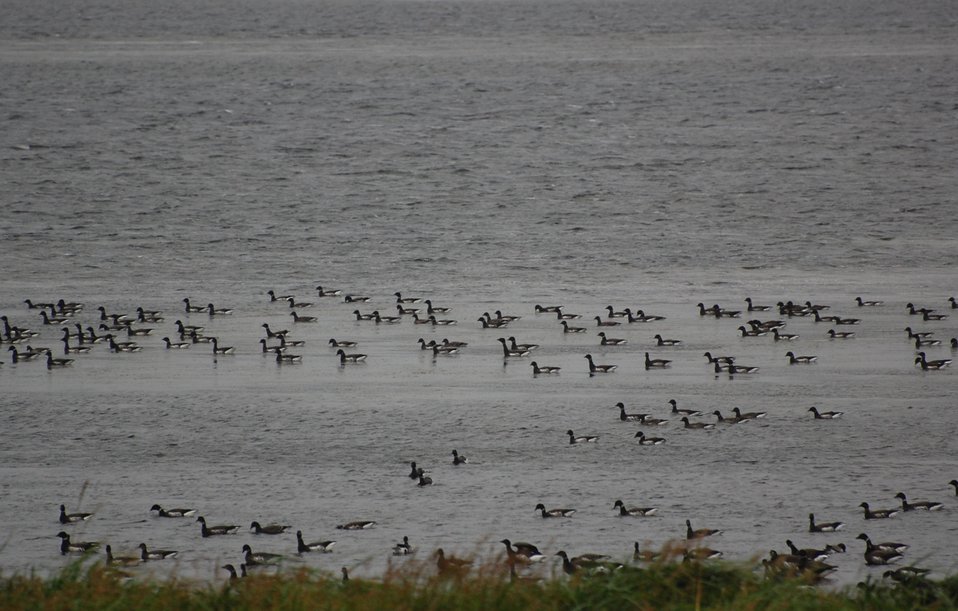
Brant at Izembek Lagoon

Izembek National Wildlife Refuge